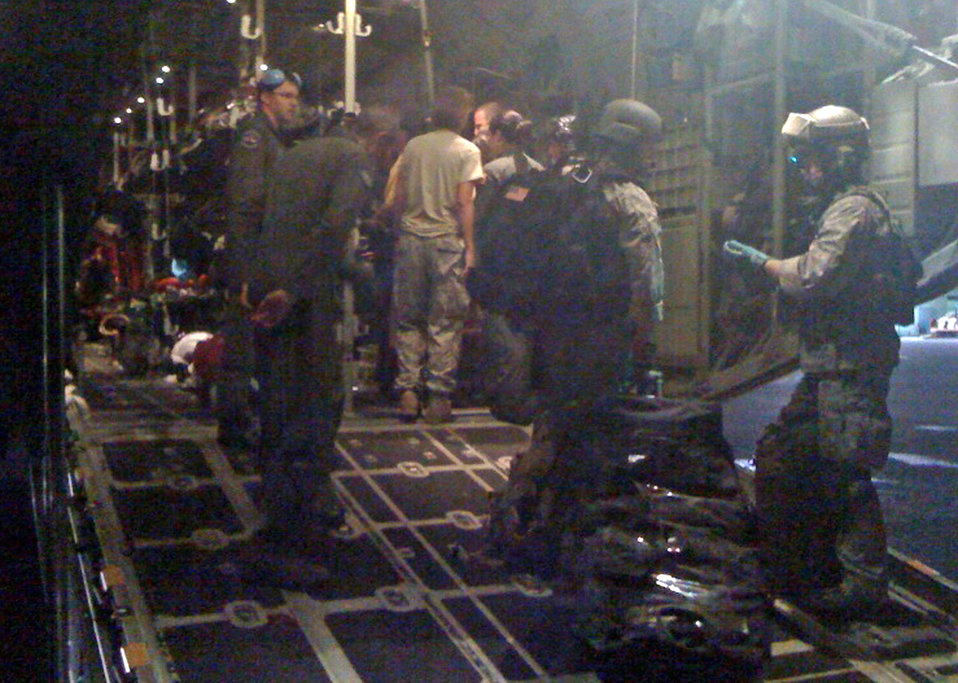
Colorado AF Reservists support evacuation of Haiti earthquake injured

Military medics and C-130 Hercules aircrew members from the Air Force Reserve's 302nd Airlift Wing finalize plans to transport evacuees during the early morning hours of Jan. 17, 2010, at Toussaint L'Ouverture International Airport in Port-au-Prince, Haiti. The C-130 aircrew, based at Peterson Air Force Base, Colo., transported the injured Haitians to Fort Lauderdale, Fla., where they received additional medical treatment.